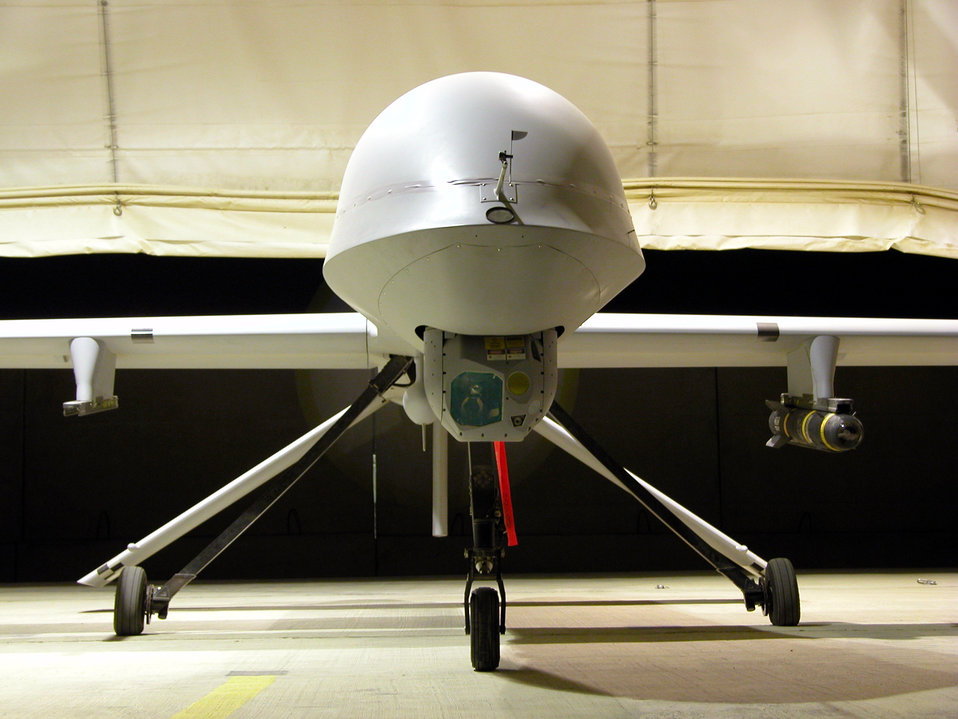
Predator

OPERATION IRAQI FREEDOM - An RQ-1 Predator assigned to the 15th Expeditionary Reconnaissance Squadron awaits its next mission at a forward-deployed location. The Department of Defense's Unmanned Aerial Vehicles Roadmap provides a defensewide vision for UAVs and related technology.